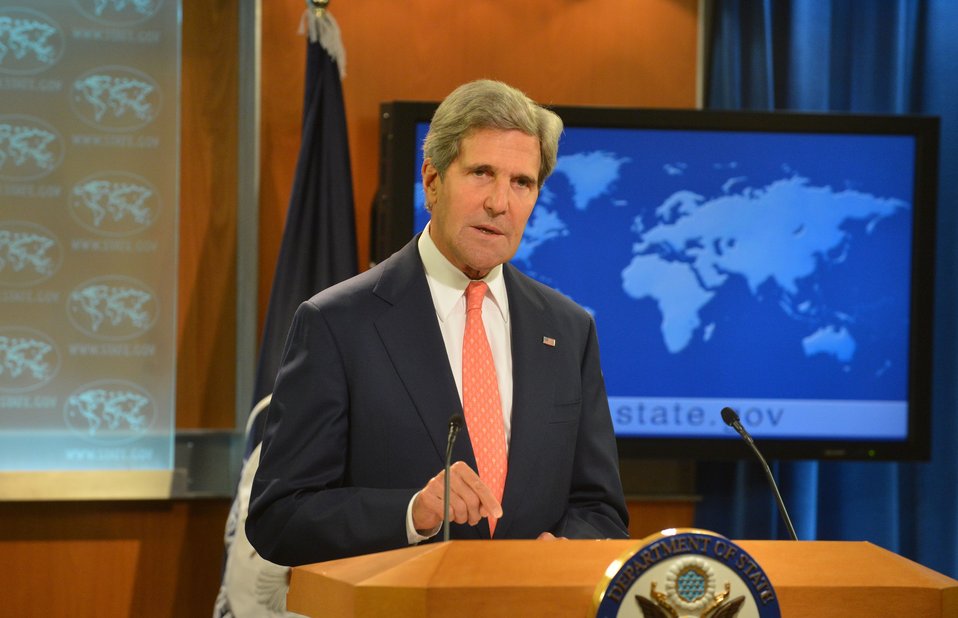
Secretary Kerry Delivers Remarks on Syria

U.S. Secretary of State John Kerry delivers remarks on Syria at the U.S. Department of State in Washington, D.C., on August 26, 2013.